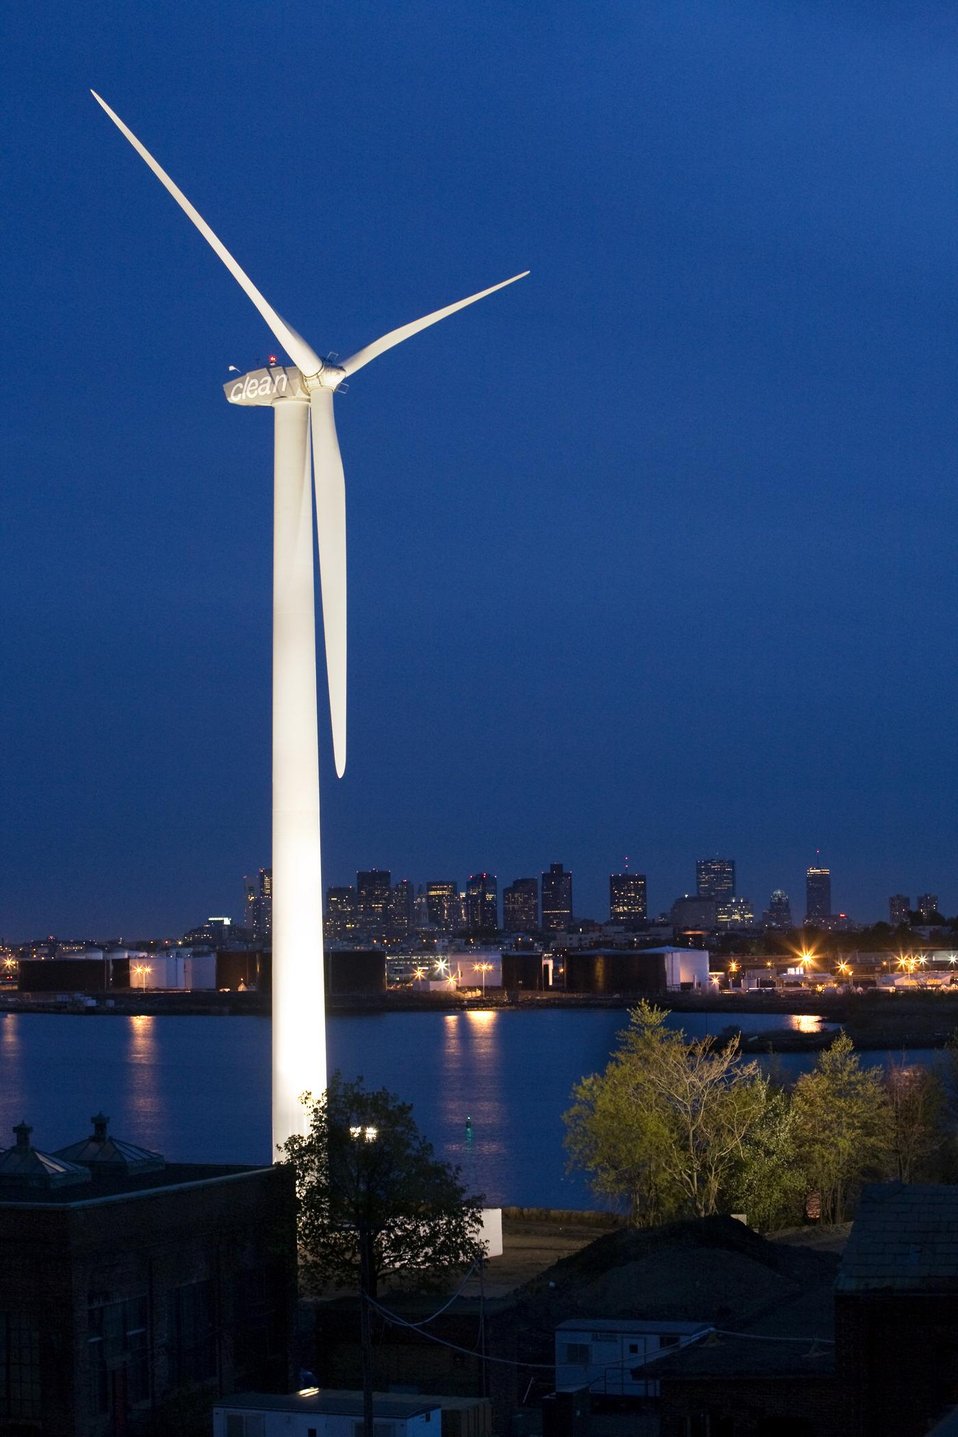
A 0.6-MW ENERTECH TURBINE WAS BUILT ON THE SITE TO A NEW, MIXED-USE LOFT COMMUNITY OUTSIDE OF BOSTON.

Forbes Park is new waterfront loft community, setting a higher standard for sustainable and environmentally responsible urban lifestyles.